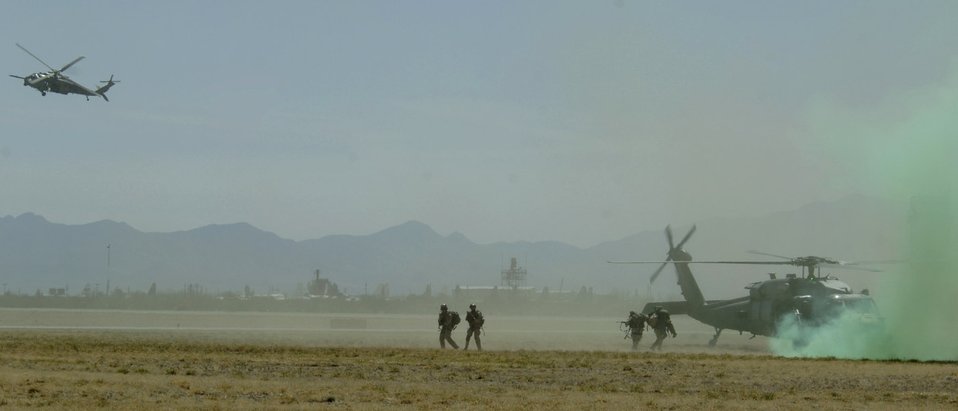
Air show features '80 Years of Airpower for America'

Pararescuemen from the 48th Rescue Squadron prepare to be picked up by an HH-60 Pave Hawk helicopter as part of a combat search and rescue demonstration March 18 during the 2007 Aerospace and Arizona Days air show at Davis-Monthan Air Force Base, Ariz. The two-day air show offered public an up-close look at military and civilian aerial demonstrations and static-display aircraft from across the U.S. The theme for this year's show was